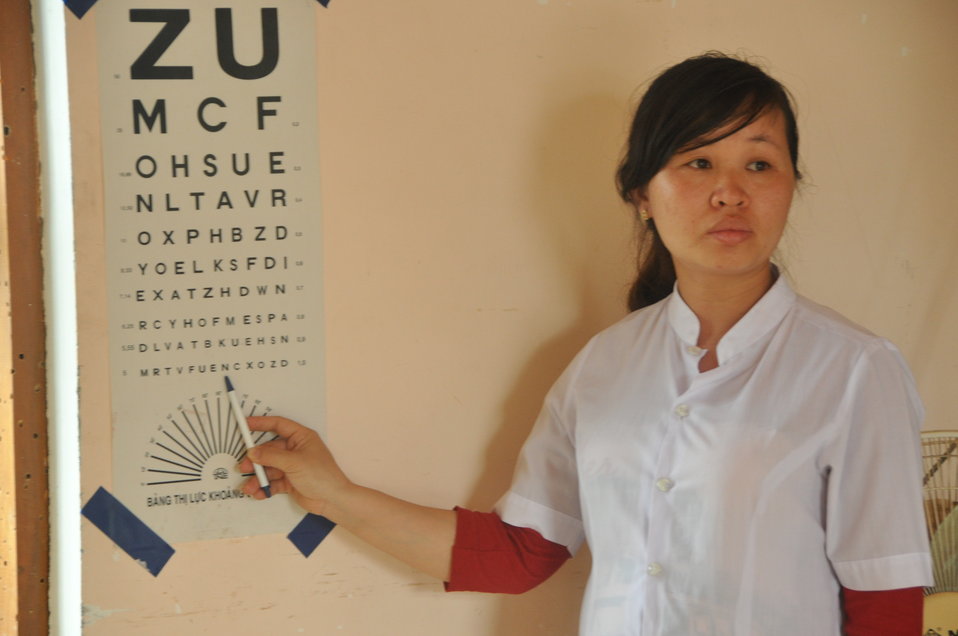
School children in Dak To, Kon Tum Province, receive eyeglasses under a program supported by USAID and partners HKI and World Learning